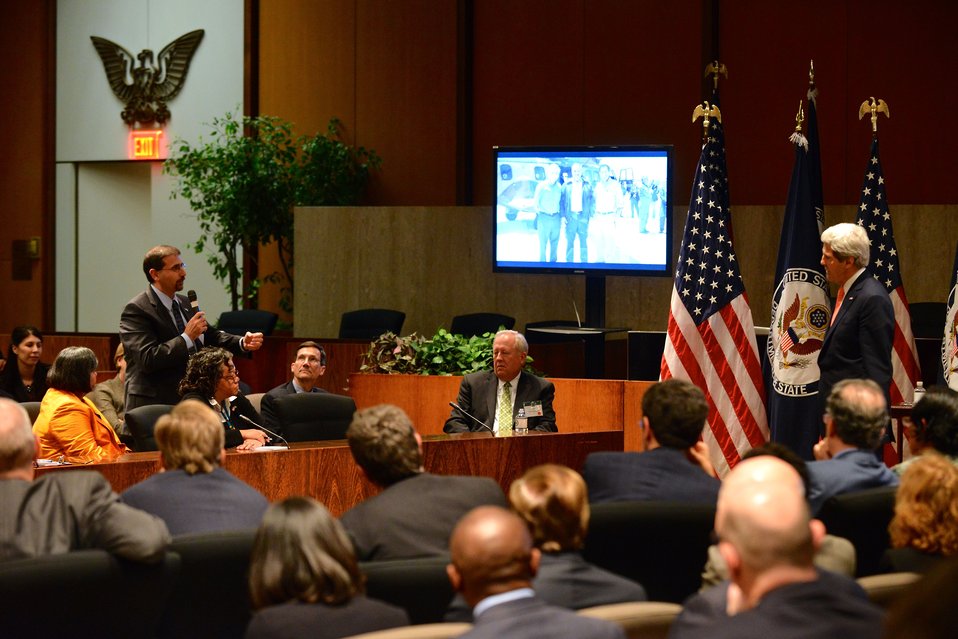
Ambassador Shapiro Asks Secretary Kerry a Question

U.S. Ambassador to Israel Dan Shapiro asks U.S. Secretary of State John Kerry a question during the Global Chiefs of Mission Conference at the U.S. Department of State in Washington, D.C., on March 11, 2014.